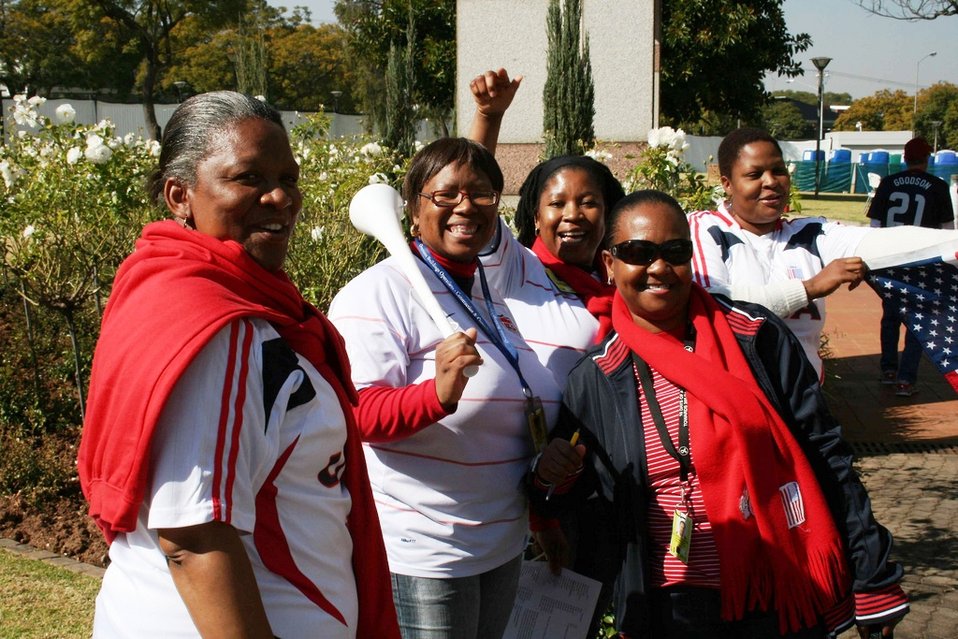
Fans Show Their Team Spirit

Fans show their spirit at the Team USA pep rally before the U.S. vs. Algeria World Cup match on June 23, 2010, in Pretoria, South Africa.